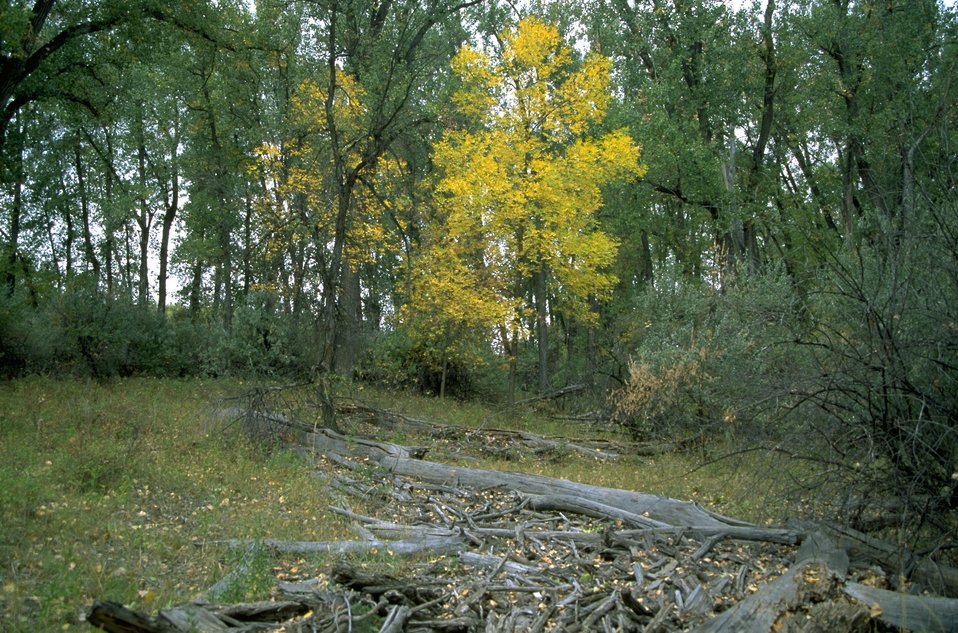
Green Ash tree turning to autumn colors